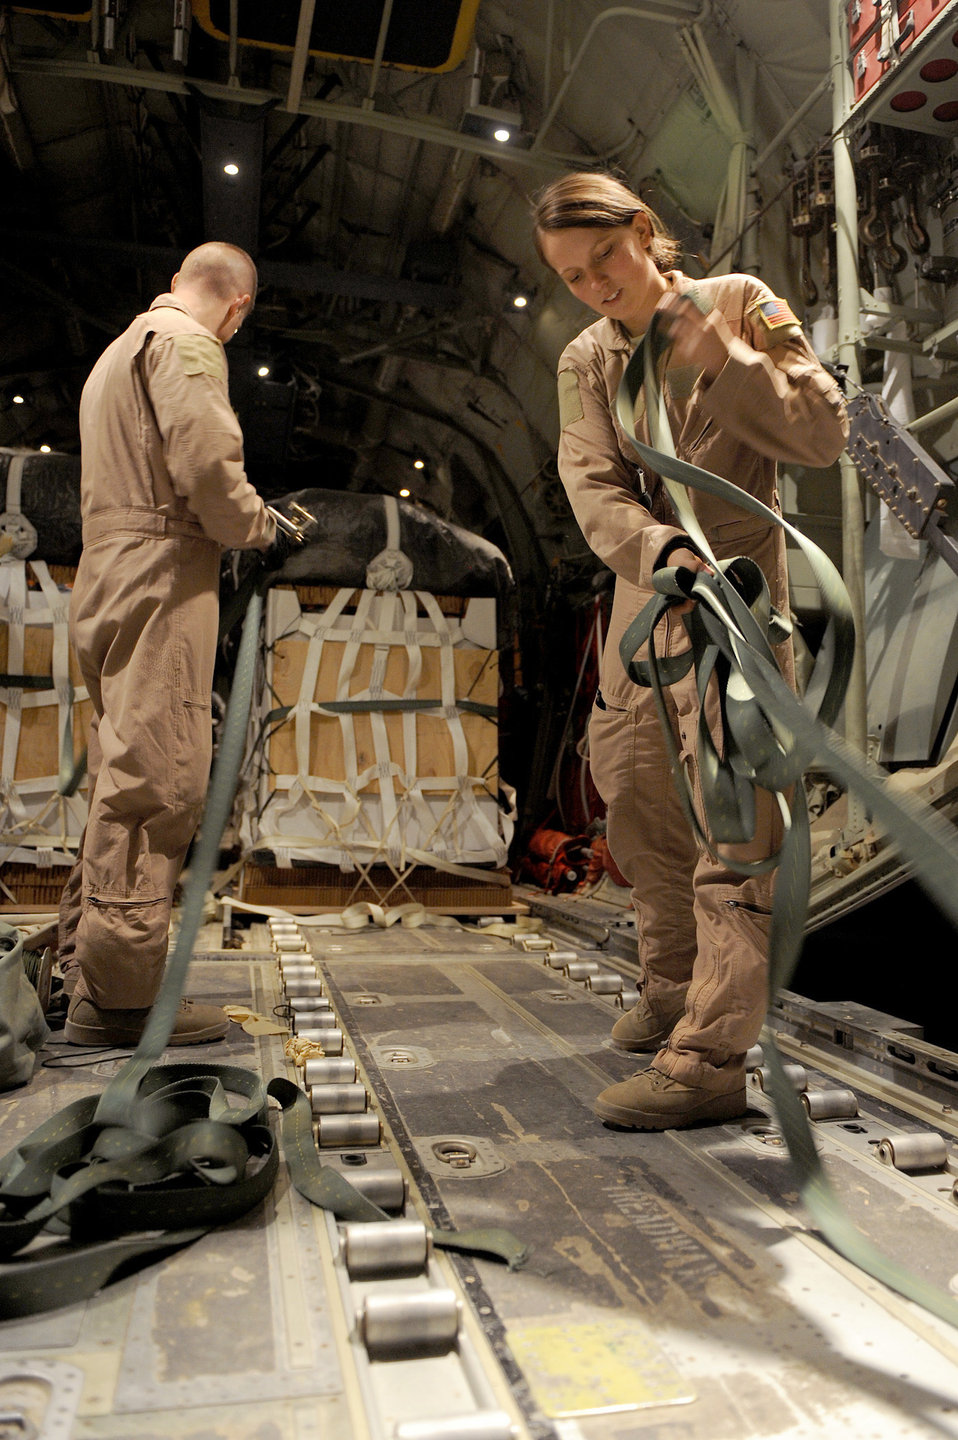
All in a tangle

Staff Sgt. T.J. Grover (left) and Airman 1st Class Rachael Orazine prepare to strap airdrop bundles in a C-130J Super Hercules Oct. 5, 2010, at Kandahar Airfield, Afghanistan. Sergeant Grover and Airman Orazine are loadmasters assigned to the 772nd Expeditionary Airlift Squadron.